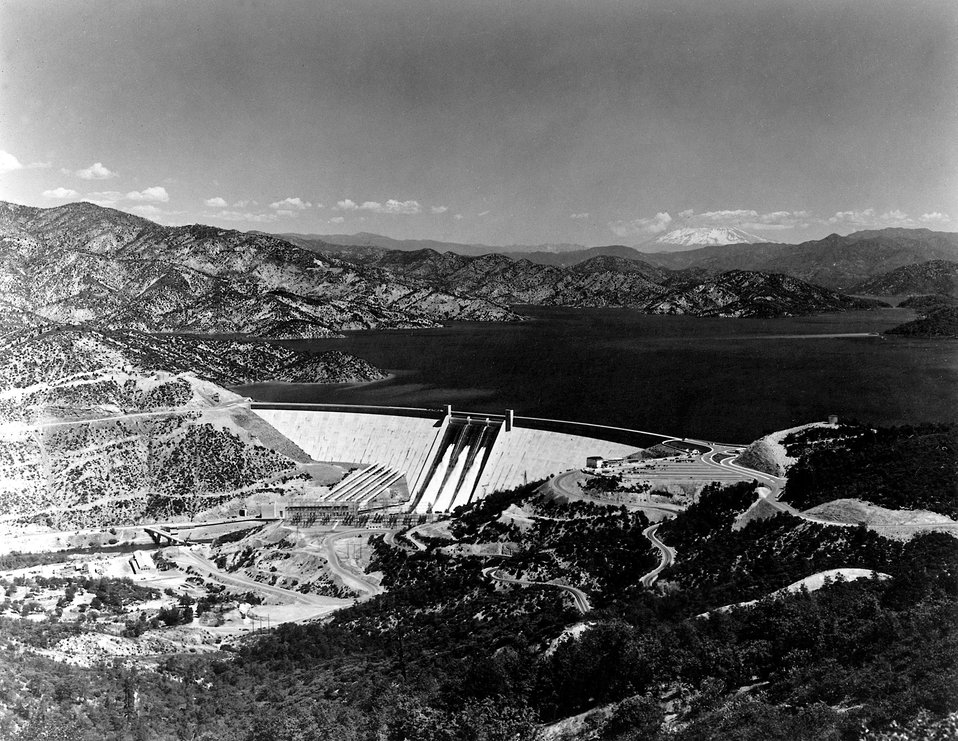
Sacramento, California. Mount Shasta Dam on the Sacramento River, Key Unit of the Central Valley Project. c. 1963